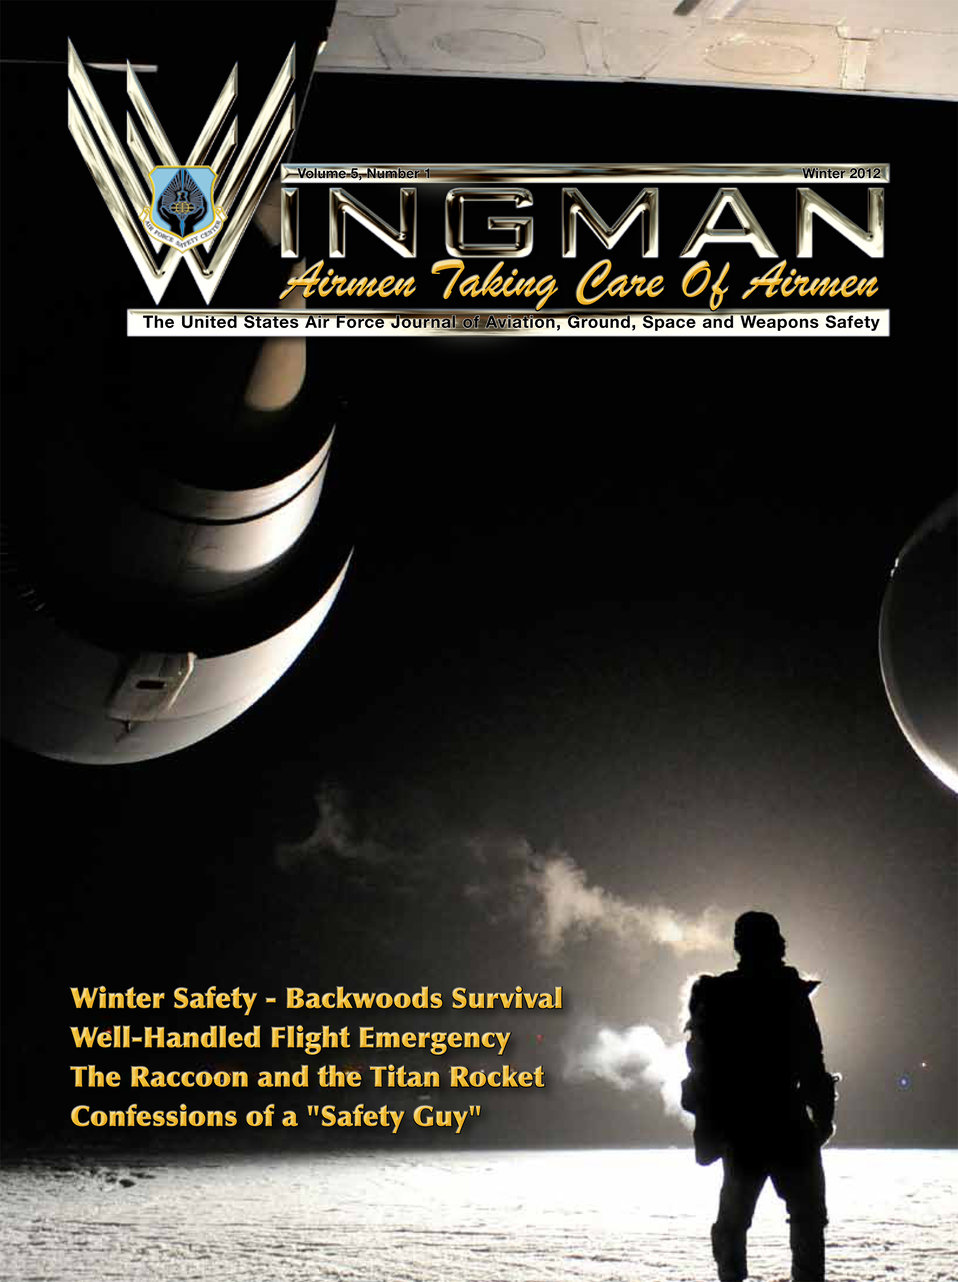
Wingman Cover